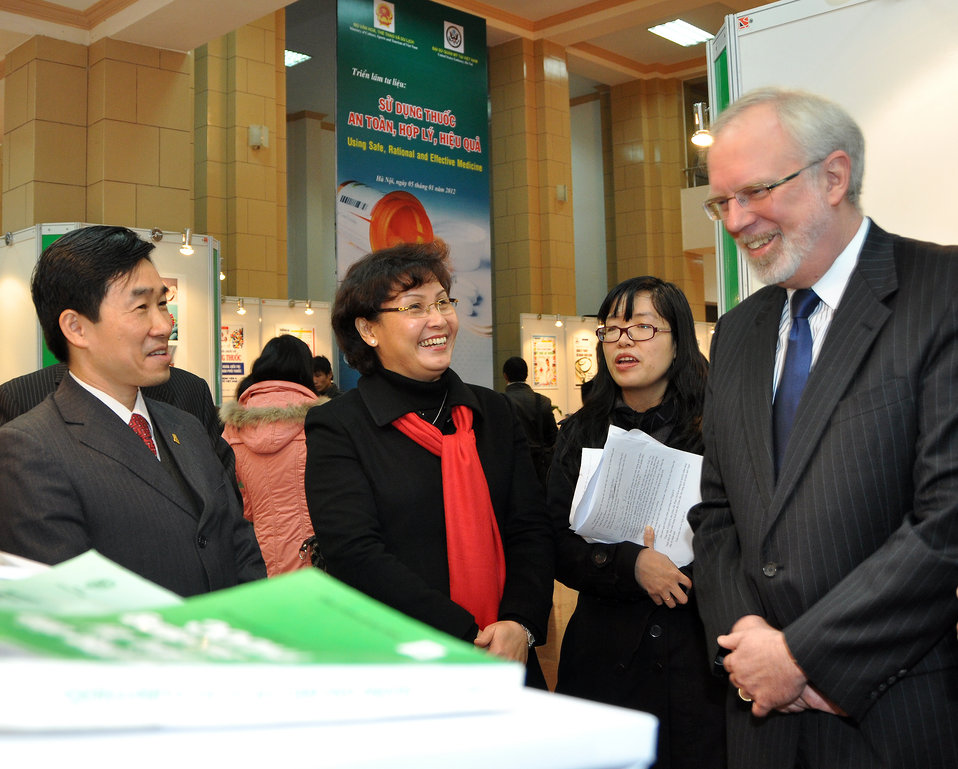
U.S. Ambassador David Shear opens safe medicine exhibition in Hanoi

Safe Medicine Exhibition